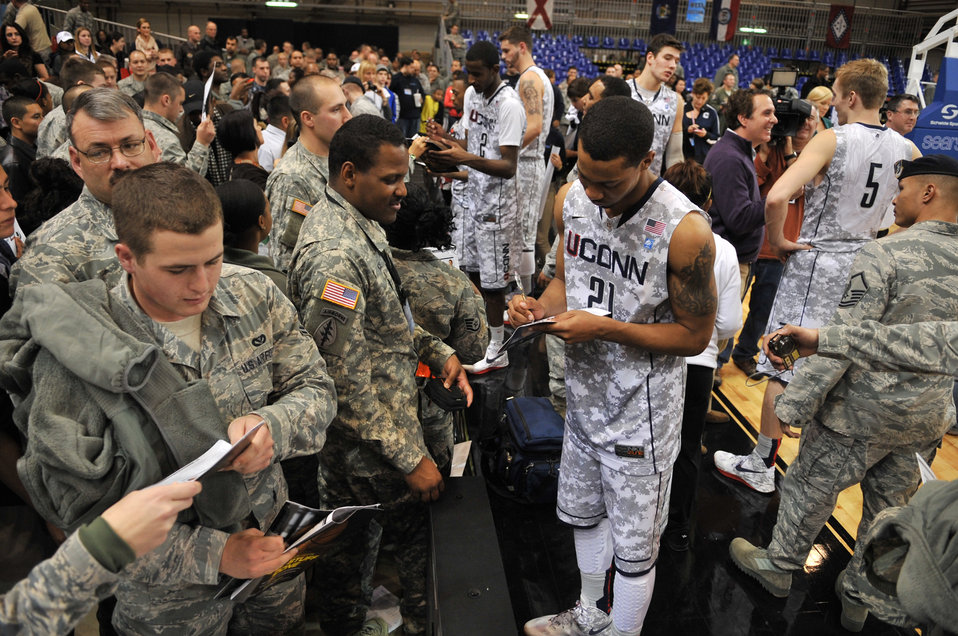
Armed Forces Classic

University of Connecticut players sign autographs for service members after the game against Michigan State during the Armed Forces Classic basketball game at Ramstein Air Base, Germany, Nov. 10, 2012. Connecticut overcame Michigan 66-62.